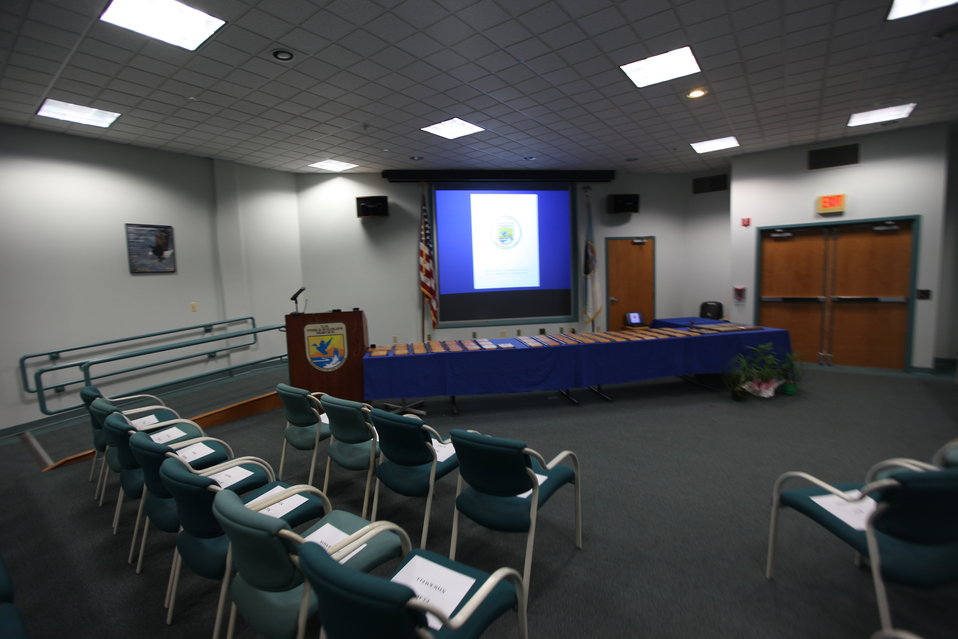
Northeast Region Employee Appreciation Awards